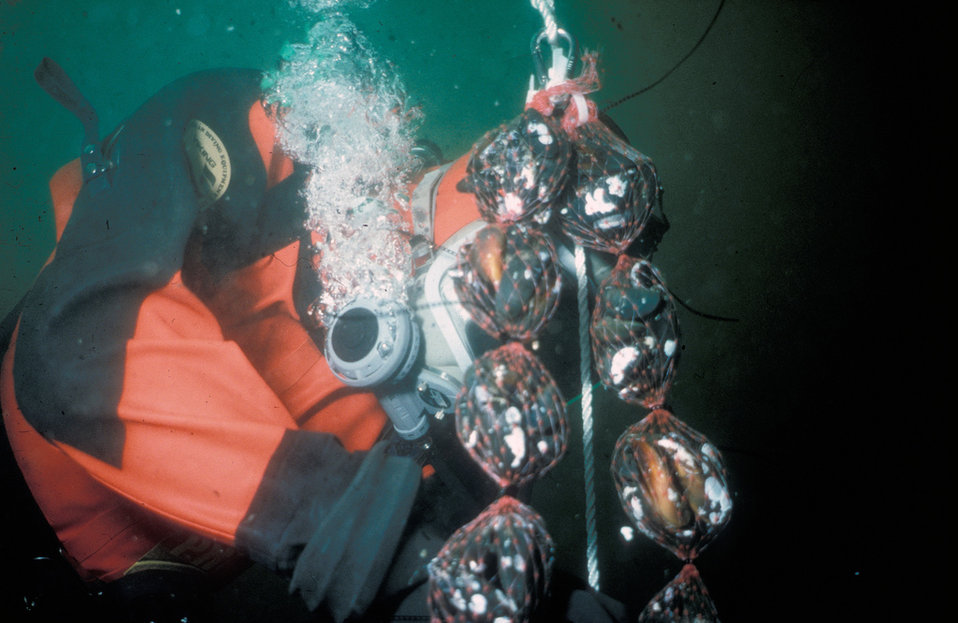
Mighty Mussels Measure Pollution

EPA Diver Lyn Frandsen places mussels in the Duwamish River to study the bioaccumulation (build-up) of chemicals in organisms in that waterway.

Lab data will then be used to determine the best cleanup levels for pollutants of concern, and potentially for public consumption advisories while cleanup takes place.

Photo by Duane Karna, EPA.

More information about the Lower Duwamish Waterway Superfund Site can be found at yosemite.epa.gov/r10/cleanup.nsf/sites/lduwamish

Check out another EPA photo set of a Duwamish Cleanup Event: www.flickr.com/photos/usepagov/sets/72157622132237074/